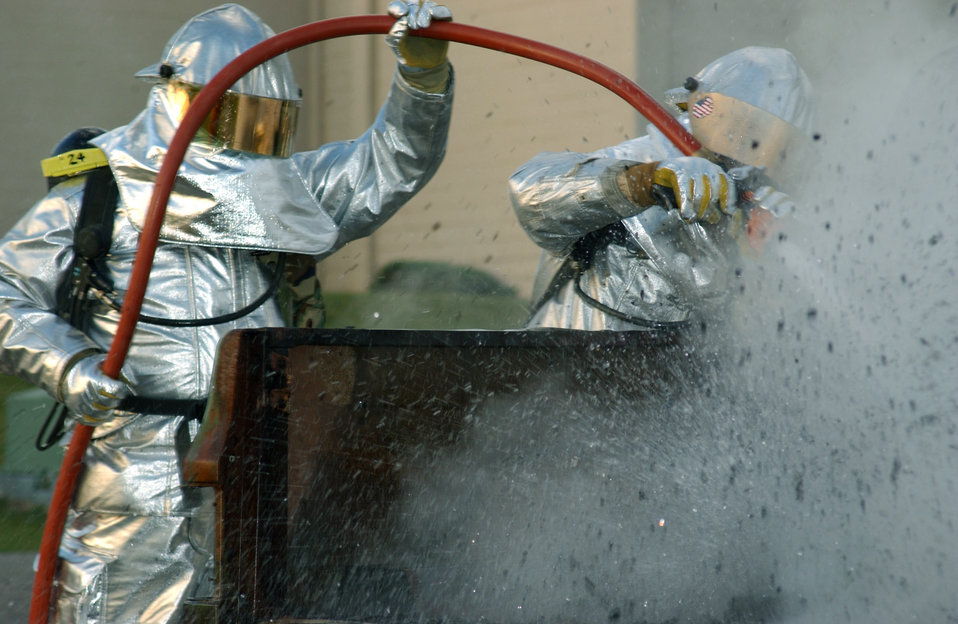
Putting out flames

VOLK FIELD AIR NATIONAL GUARD BASE, Wis. -- Firefighters from the West Virginia Air National Guard extinguish a fire during a readiness exercise here recently. The Airmen are assigned to the 167th Airlift Wing in Martinsburg, W. Va.